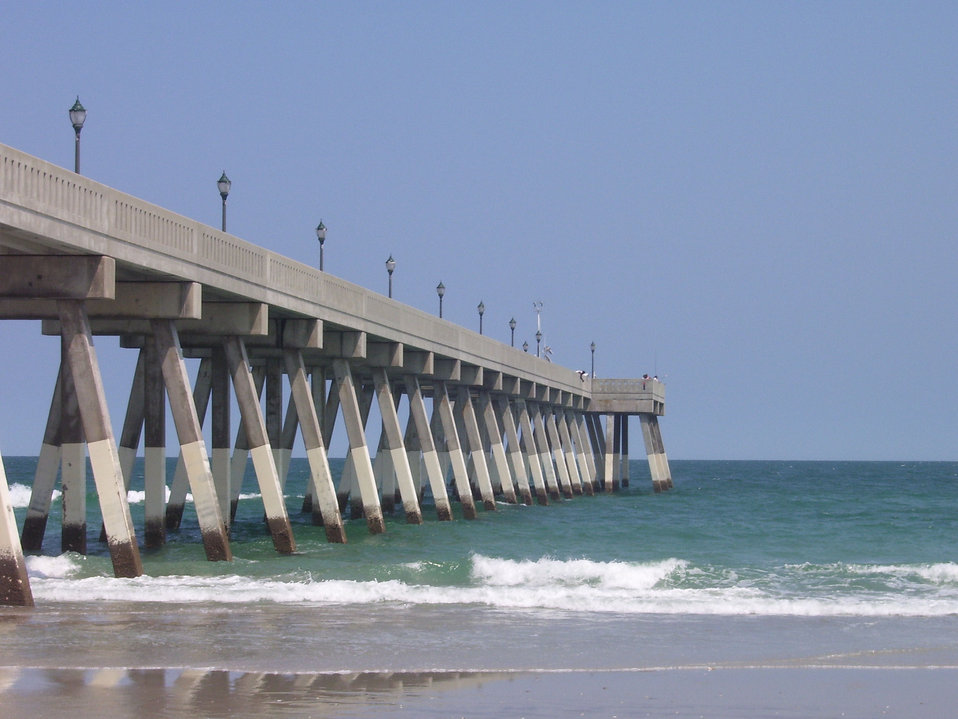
Johnie Mercer's Fishing Pier, a concrete structure, has replaced an older wooden pier that was destroyed in a hurricane.